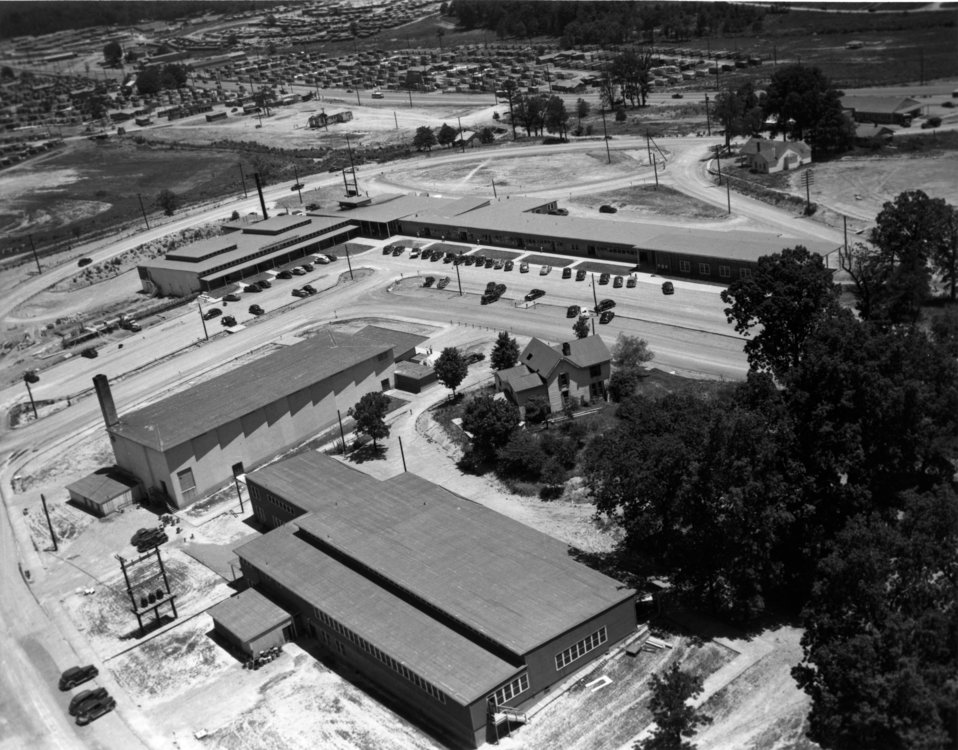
Aerial of Oak Ridge